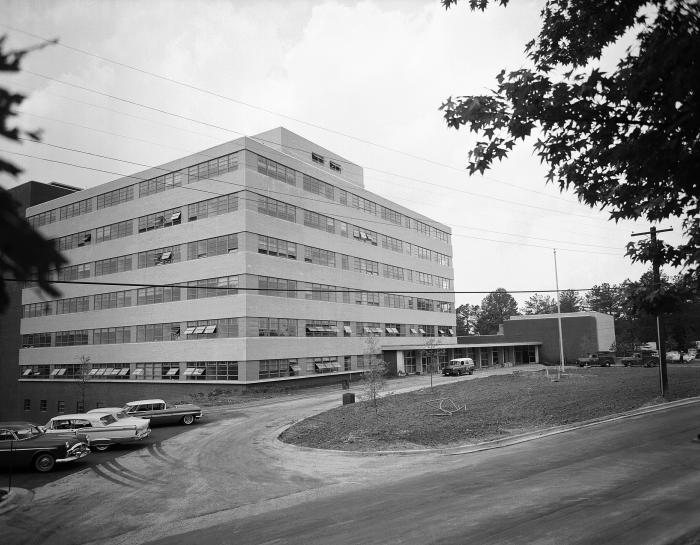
Looking westward, this historic 1960 view, depicts Building 1 of the Centers for Disease Control and Prevention (CDC), as it was being constructed. It is still located on Clifton Road, in Atlanta, Georgia. This was formerly the main entrance to this organization.